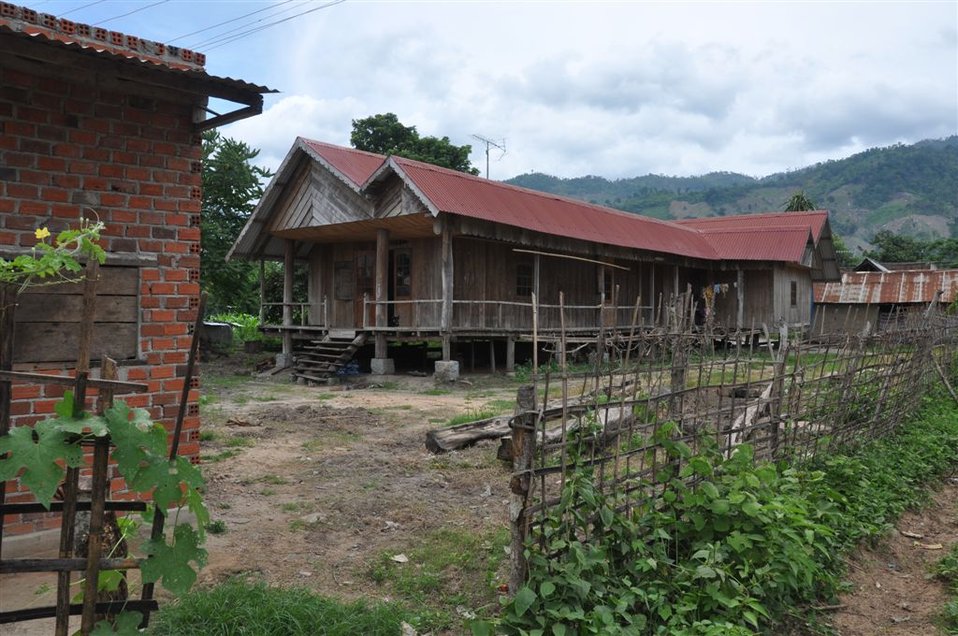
Local populations benefit from new cocoa crop techniques and market access.